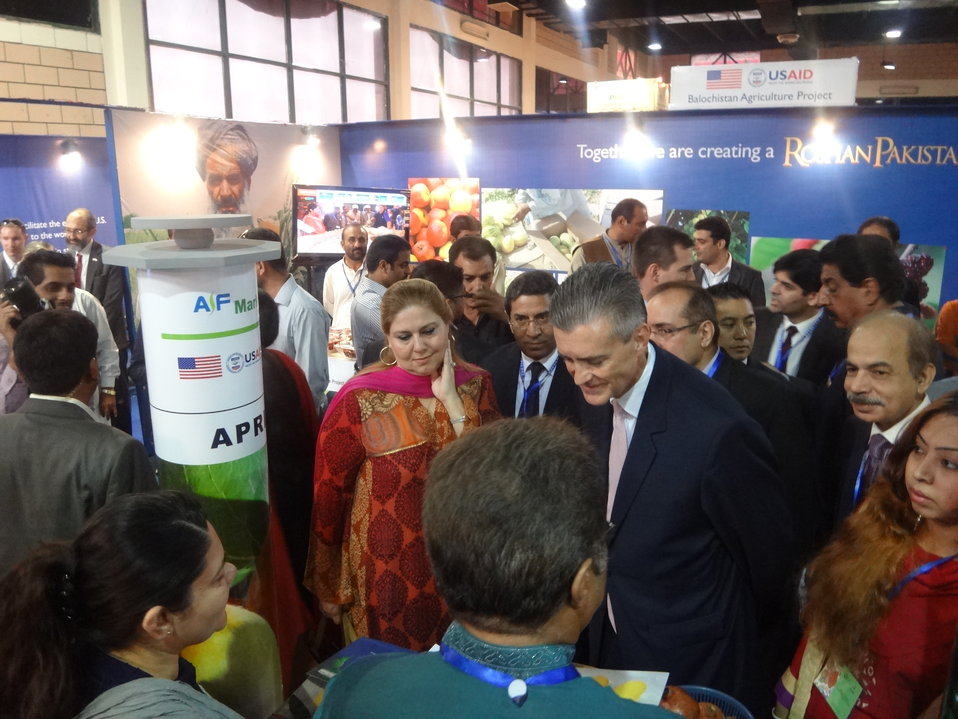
US Ambassador's visit to The Agribusiness Project at TDAP Expo, Karachi, September 27, 2013 (4)